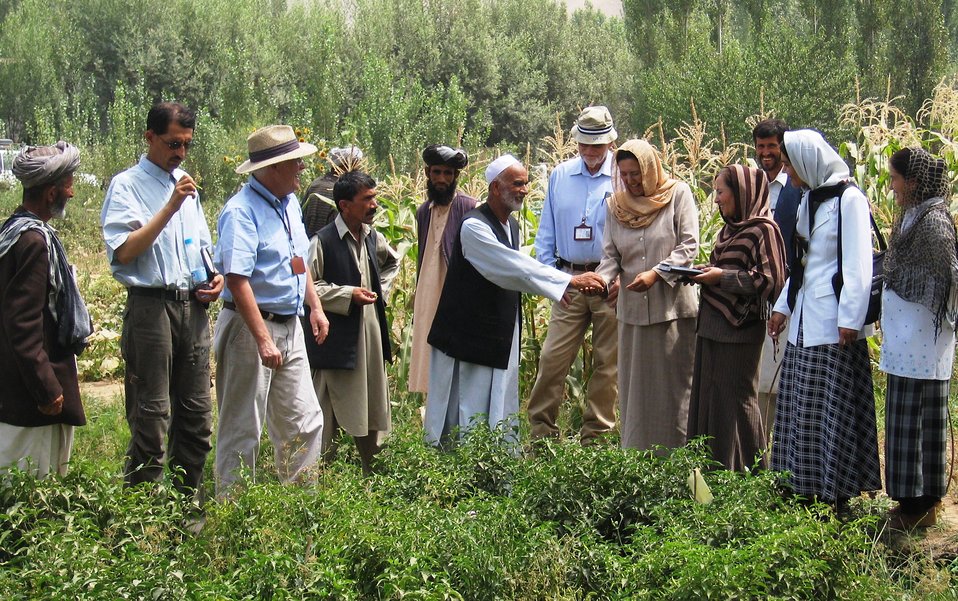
FieldDayPeppers-large1a